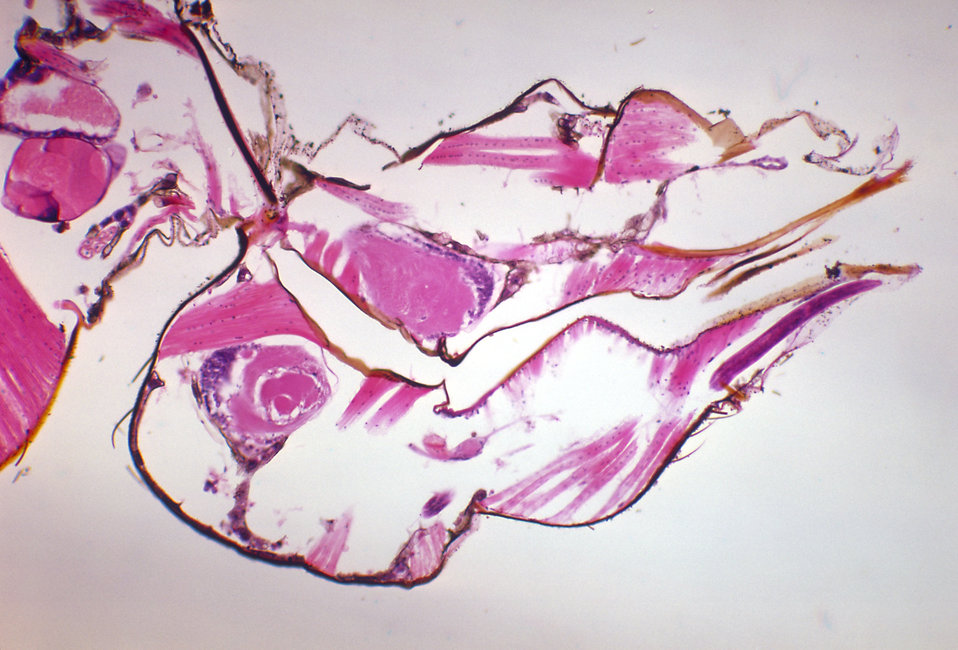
A photomicrograph revealing the histology of Onchocerca volvulus developing in a Black Fly, Simulium ochraceum.